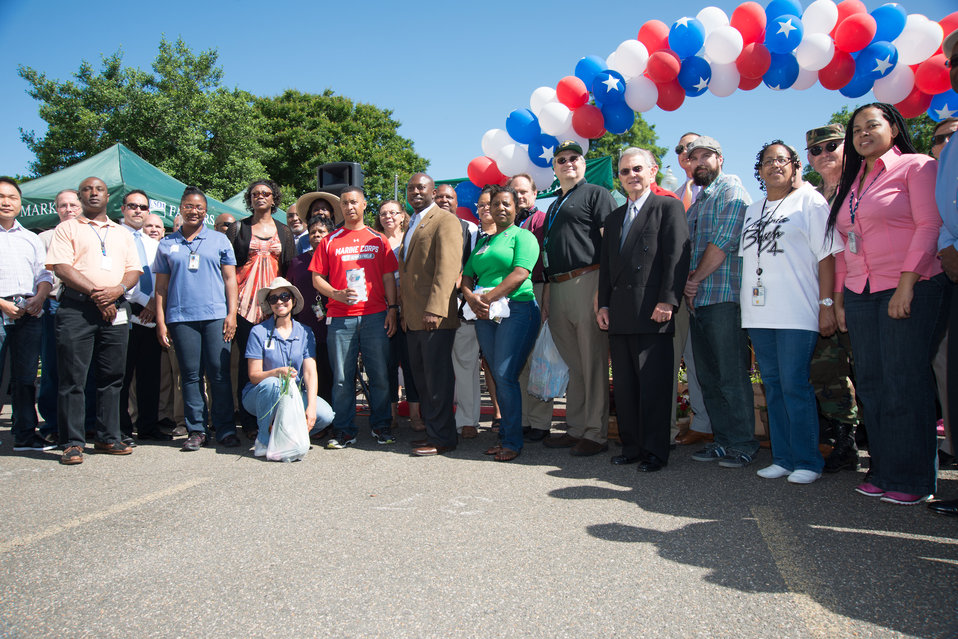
U.S. Department of Agriculture veterans pose for a group photo at the opening of USDA’s 2014 Farmers Market in the east parking lot of USDA in Washington, D.C. on Friday, Jun. 6, 2014.